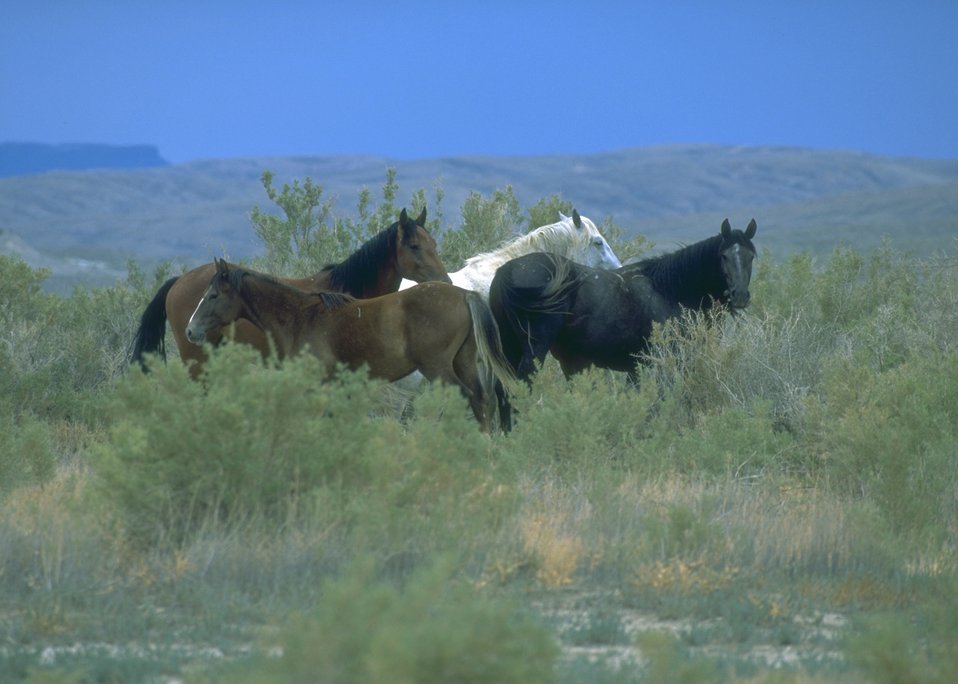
Wild horses, Rock Springs Field Office.